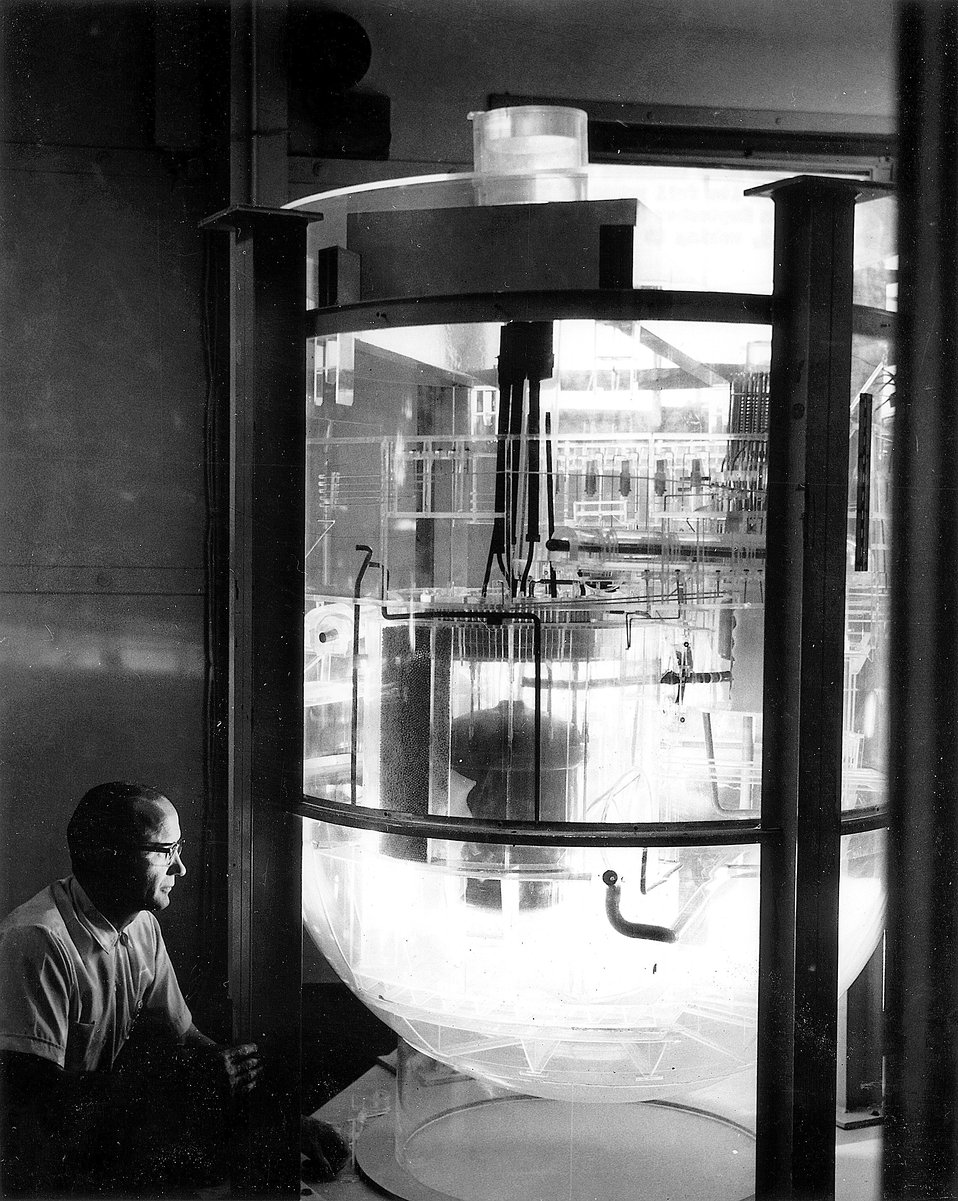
One-sixth scale model of Oak Ridge National Laboratory's Molten Salt Reactor Experiment -- The MSRE achieved criticality June 1, 1965, and reached its full power of 7,500 kilowatts in May 1966. c. 1968